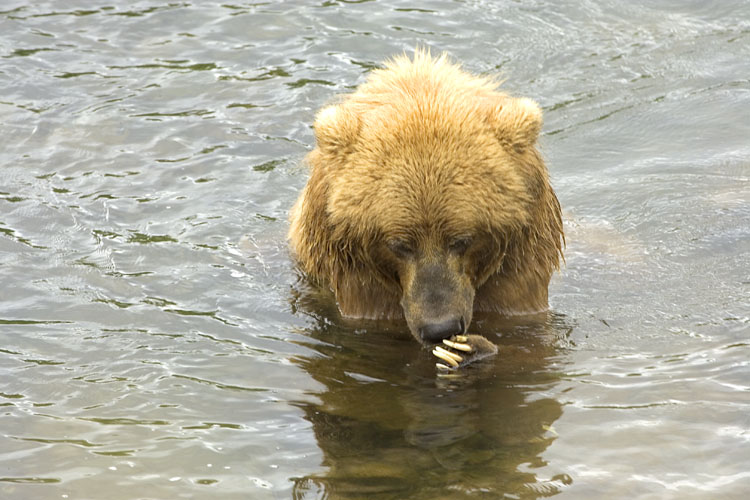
KOD Hildebrand (11)

Kodiak National Wildlife Refuge- Wildlife